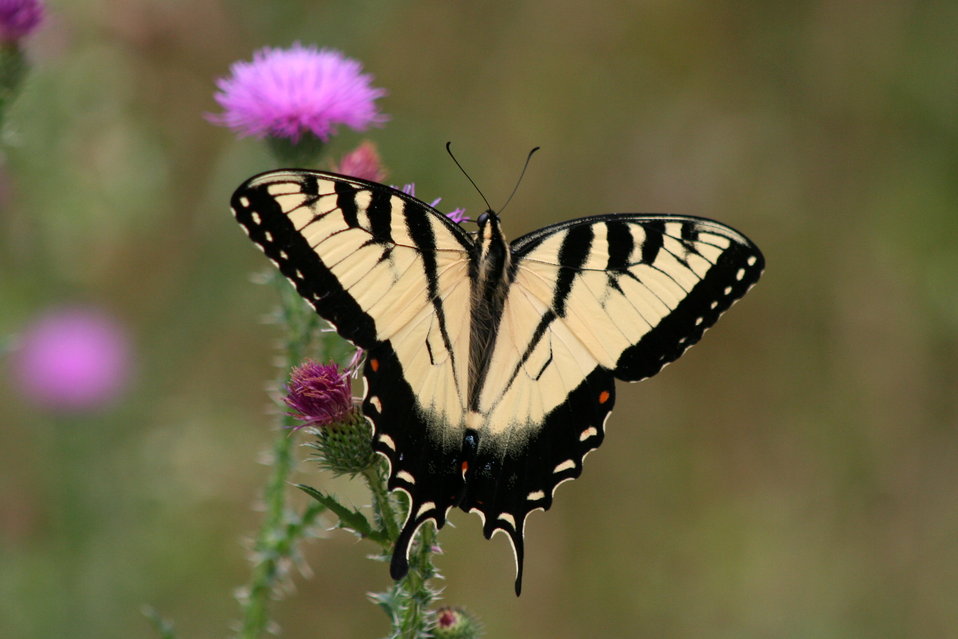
Tiger swallowtail on a thistle.